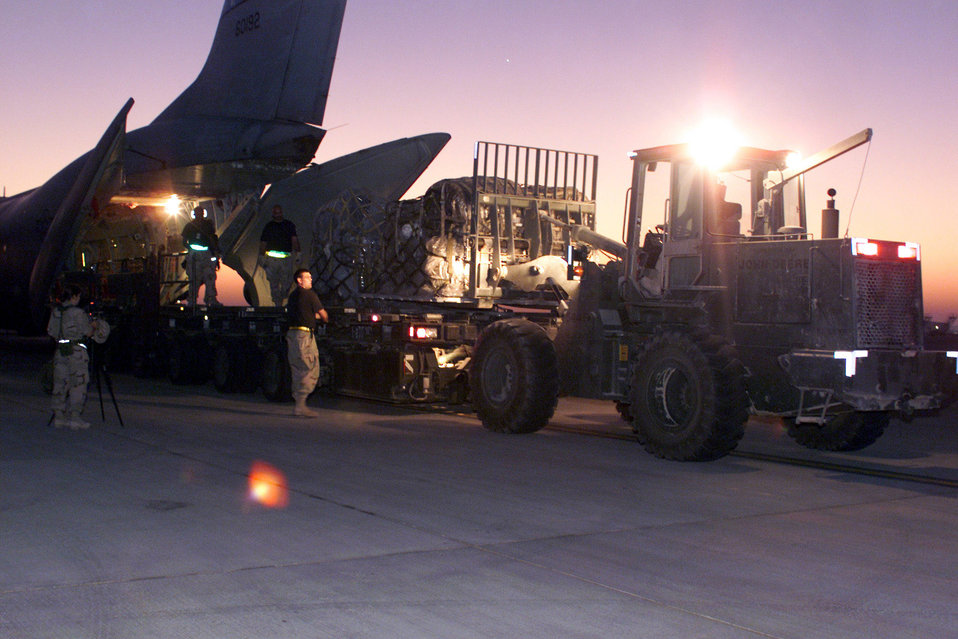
Unloading

OPERATION ENDURING FREEDOM -- Air Force crews unload a C-141C Starlifter after it arrives at a forward-deployed location in support of Operation Enduring Freedom.